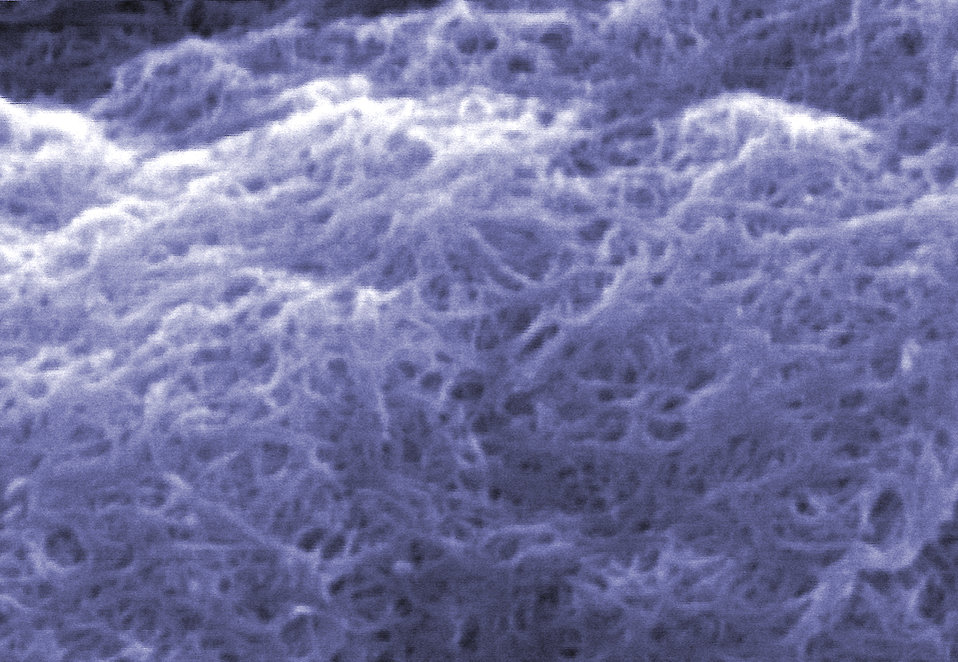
Carbon Nanotube Measurements

Scanning electron microscope image of 'cleaned' carbon nanotubes at NIST (color added for clarity.)